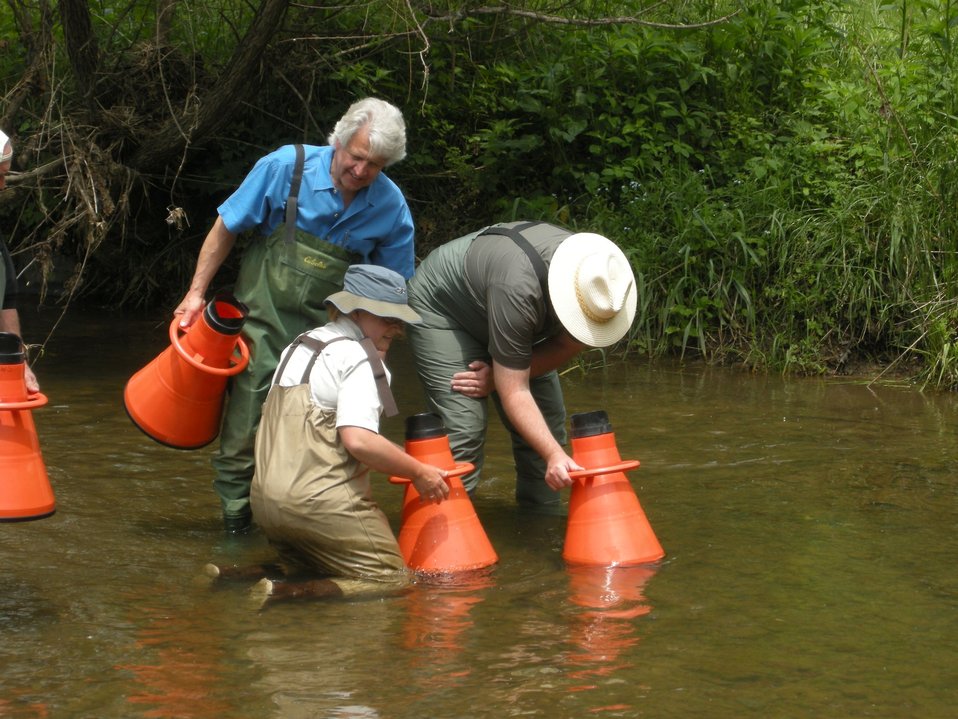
OSM Director Joseph Pizarchik Using a View Tube to Observe Mussels in Indian Creek

OSM director visited Indian Creek and donned chest waders to assist Service biologists in the creek as they searched for the federally listed endangered tan riffleshell and other freshwater mussels.